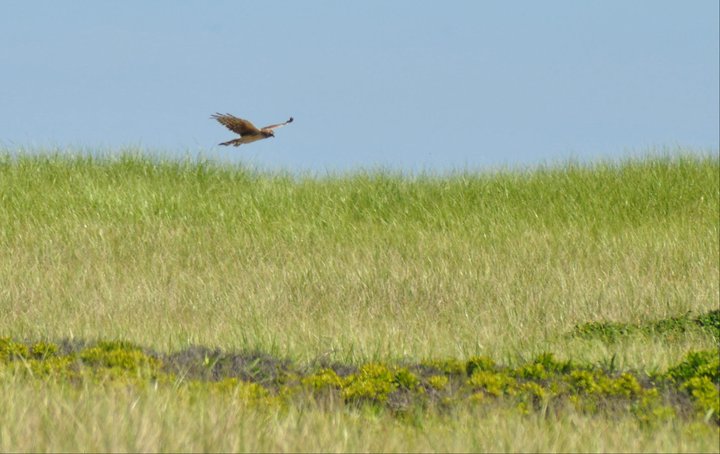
Northern Harrier

A Northern harrier at the Nantucket National Wildlife Refuge, MA.